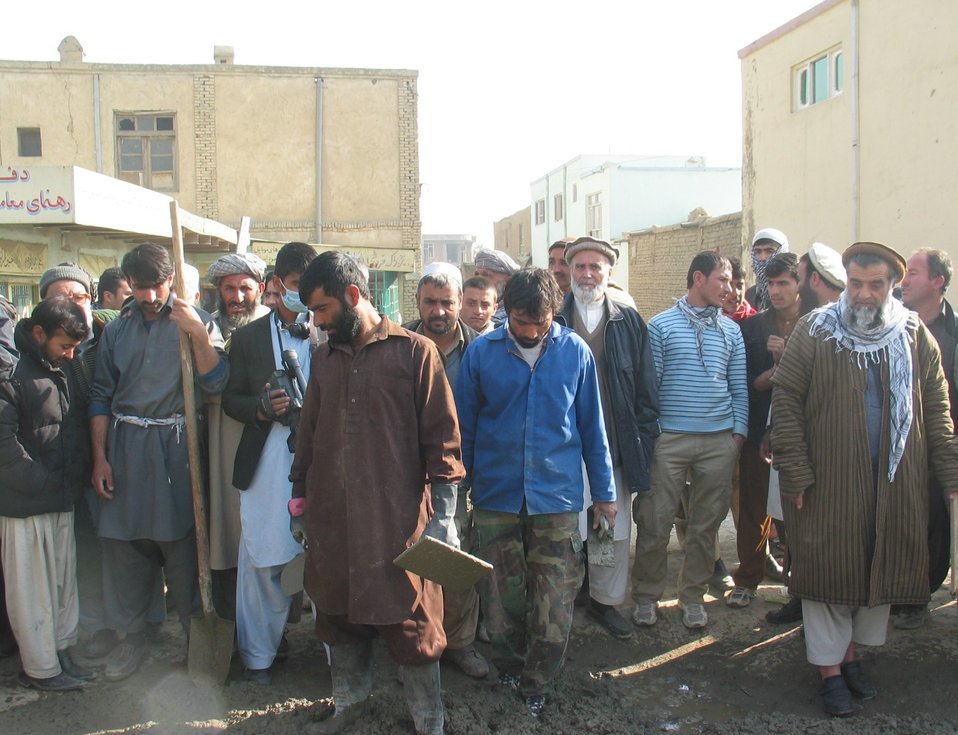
Kabul River Bridge Renovation, December 3, 2010